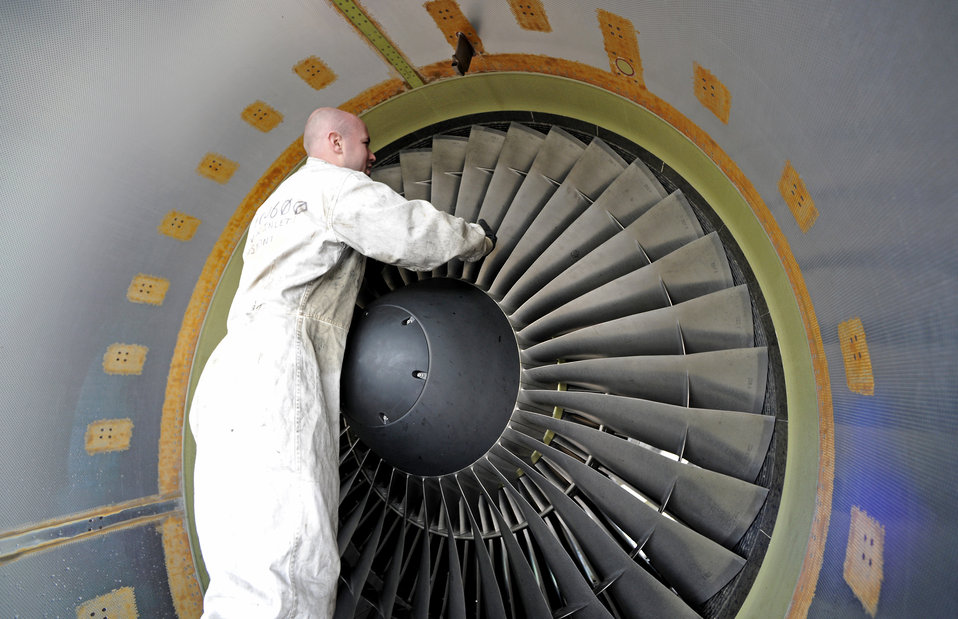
Preflight inspections

Staff Sgt. Sean Durkin inspects a C-17 Globemaster III engine April 12, 2011, at Spangdahlem Air Base, Germany. Sergeant Durkin is an aircraft hydraulics journeyman assigned to the726th Air Mobility Squadron.